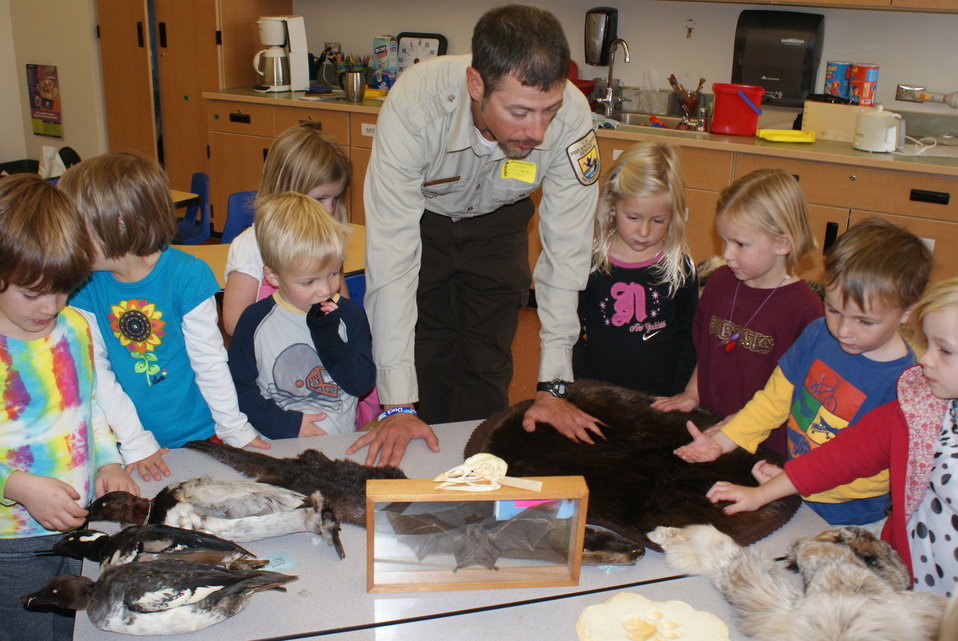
Scientists in the Community Program

U.S. Fish and Wildlife Service Mountain-Prairie Region Deputy ARD for External Affairs, Matt Kales, introduces early childhood education students at William Roberts Elementary School in Denver to some of Colorado's native and historic wildlife species.